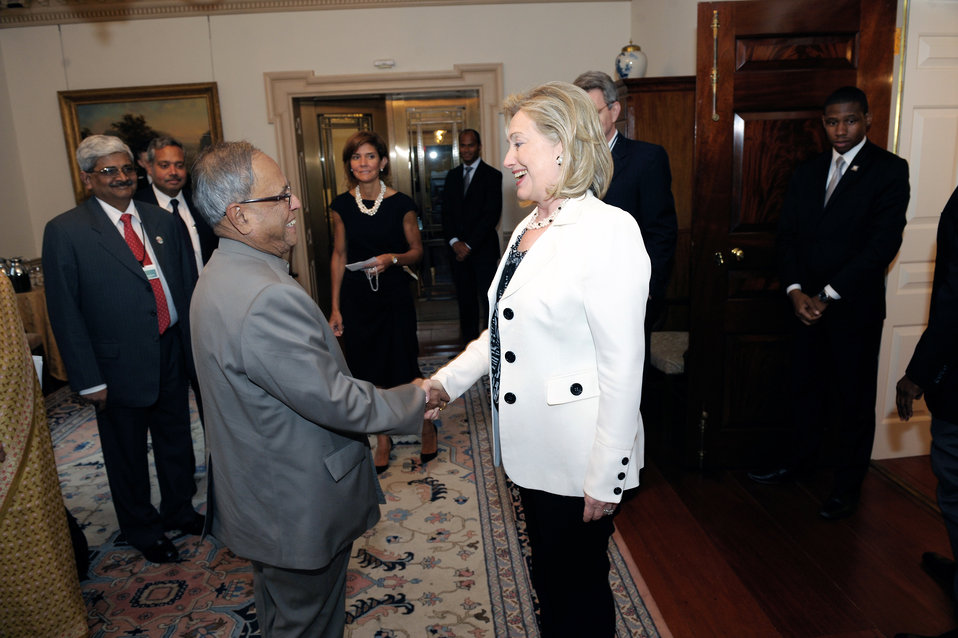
Secretary Clinton Shakes Hands With Indian Finance Minister Mukherjee

U.S. Secretary of State Hillary Rodham Clinton shakes hands with Indian Finance Minister Pranab Mukherjee, at the U.S. Department of State in Washington, D.C., on June 28, 2011.